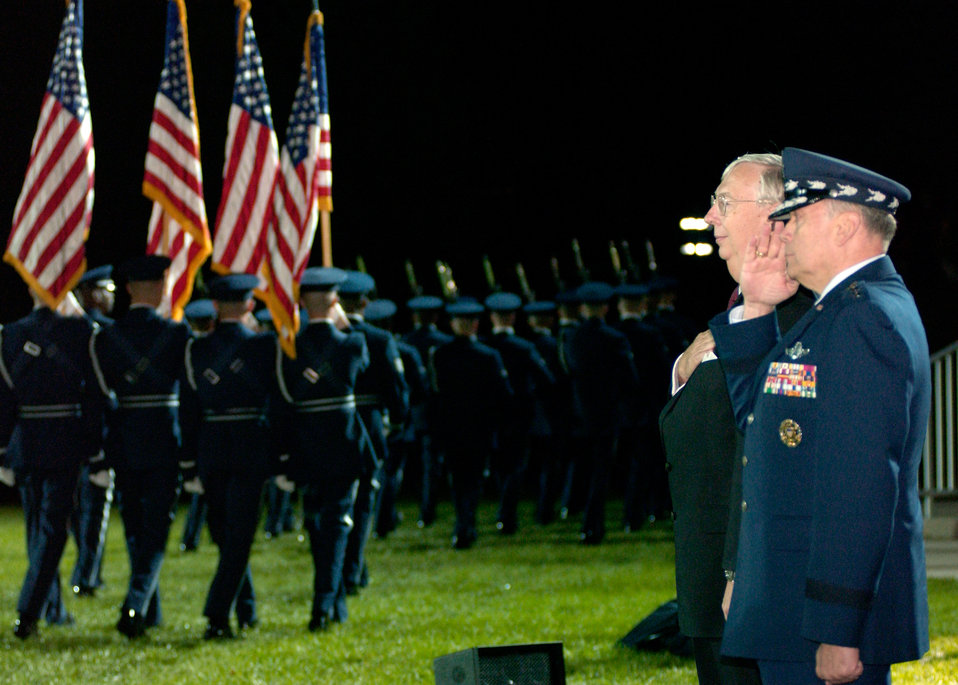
An old tradition kept alive

BOLLING AIR FORCE BASE, D.C. -- Secretary of the Air Force Dr. James G. Roche and Air Force Chief of Staff Gen. John P. Jumper pay respect to the flags during the U.S. Air Force Tattoo Ceremony here Oct. 5. The tattoo is a 300-year-old tradition held worldwide, showcasing the excellence and readiness of servicemembers. During the ceremony, Airmen exhibit the precision and teamwork essential for mission success.